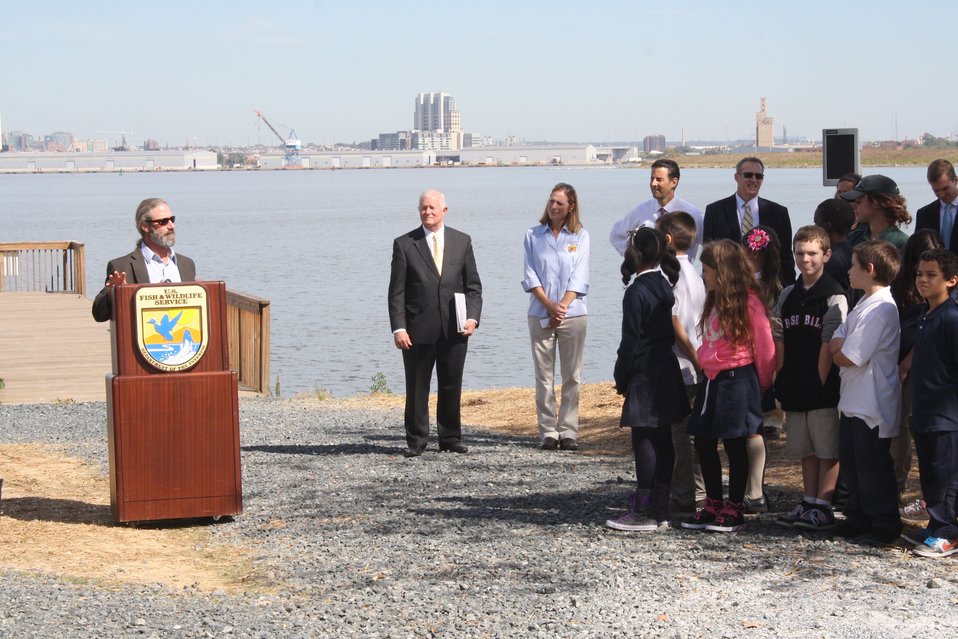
James Piper Bond, president of the Living Classrooms Foundation discusses the importance of the Masonville partnership in the area.